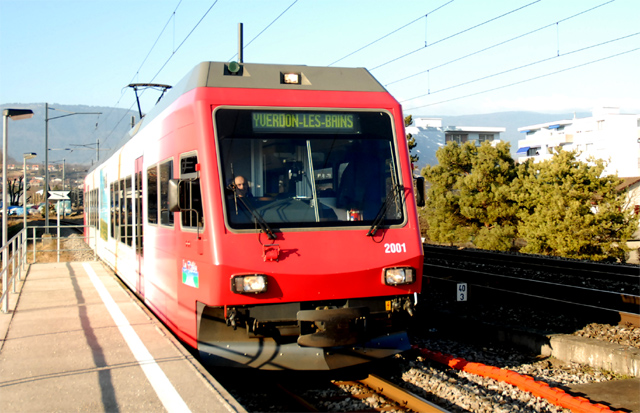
Nederlands: YSteC Be 2001 op 3 februari 2007 te William Barbey YSteC